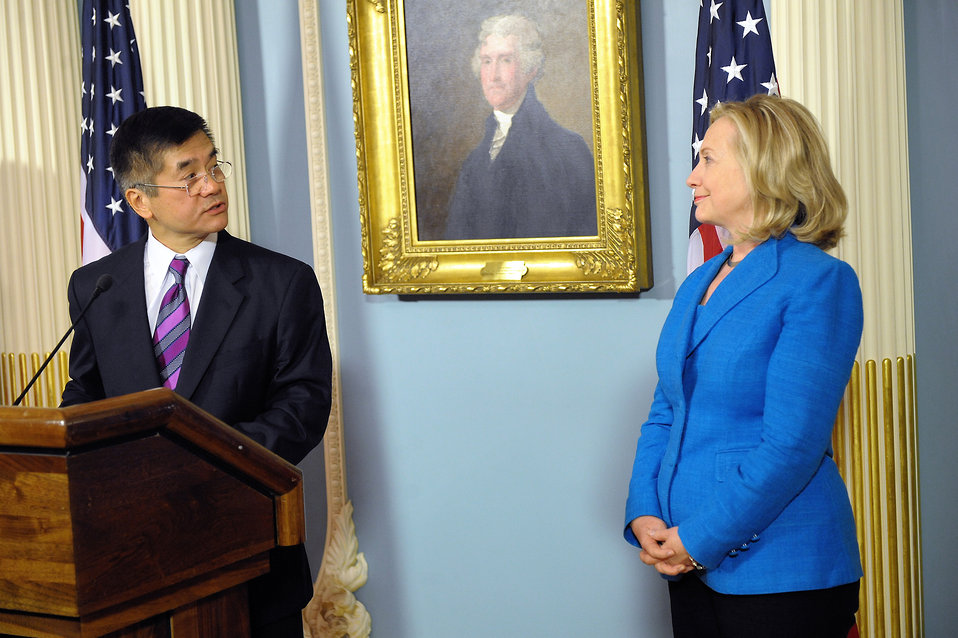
Secretary Clinton Swears in the Honorable Gary Locke as U.S. Ambassador to the People’s Republic of China

U.S. Secretary of State Hillary Rodham Clinton officiates the Swearing-In Ceremony for the Honorable Gary Locke, U.S. Ambassador to the People’s Republic of China, at the U.S. Department of State in Washington, D.C., on August 1, 2011.